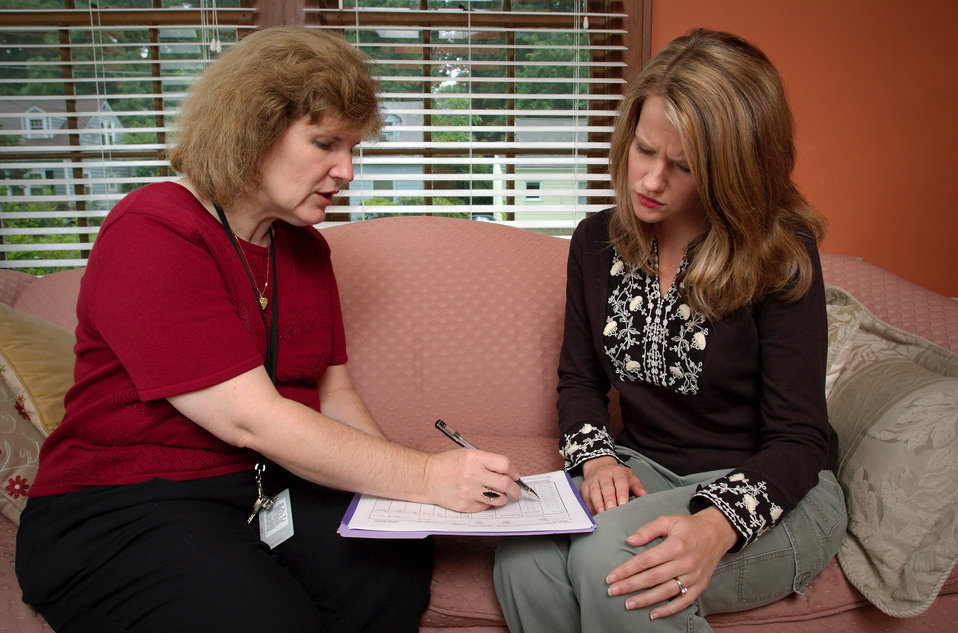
This photograph depicted a Center for Disease Control (CDC), National Center for Health Statistics (NCHS) employee (left), in the process of gathering medical information from a health survey participant, to whom she was explaining the data-collection form. The NCHS compiles statistical information, used to help guide actions and policies that will improve the health of the nation's people. NCHS uses a variety of approaches to efficiently obtain information from its sources. They collect data from birth and death records, medical records, interview surveys, and through direct physical exams and laboratory testing. NCHS is a key element of our national public health infrastructure, providing important surveillance information that helps identify and address critical health problems.